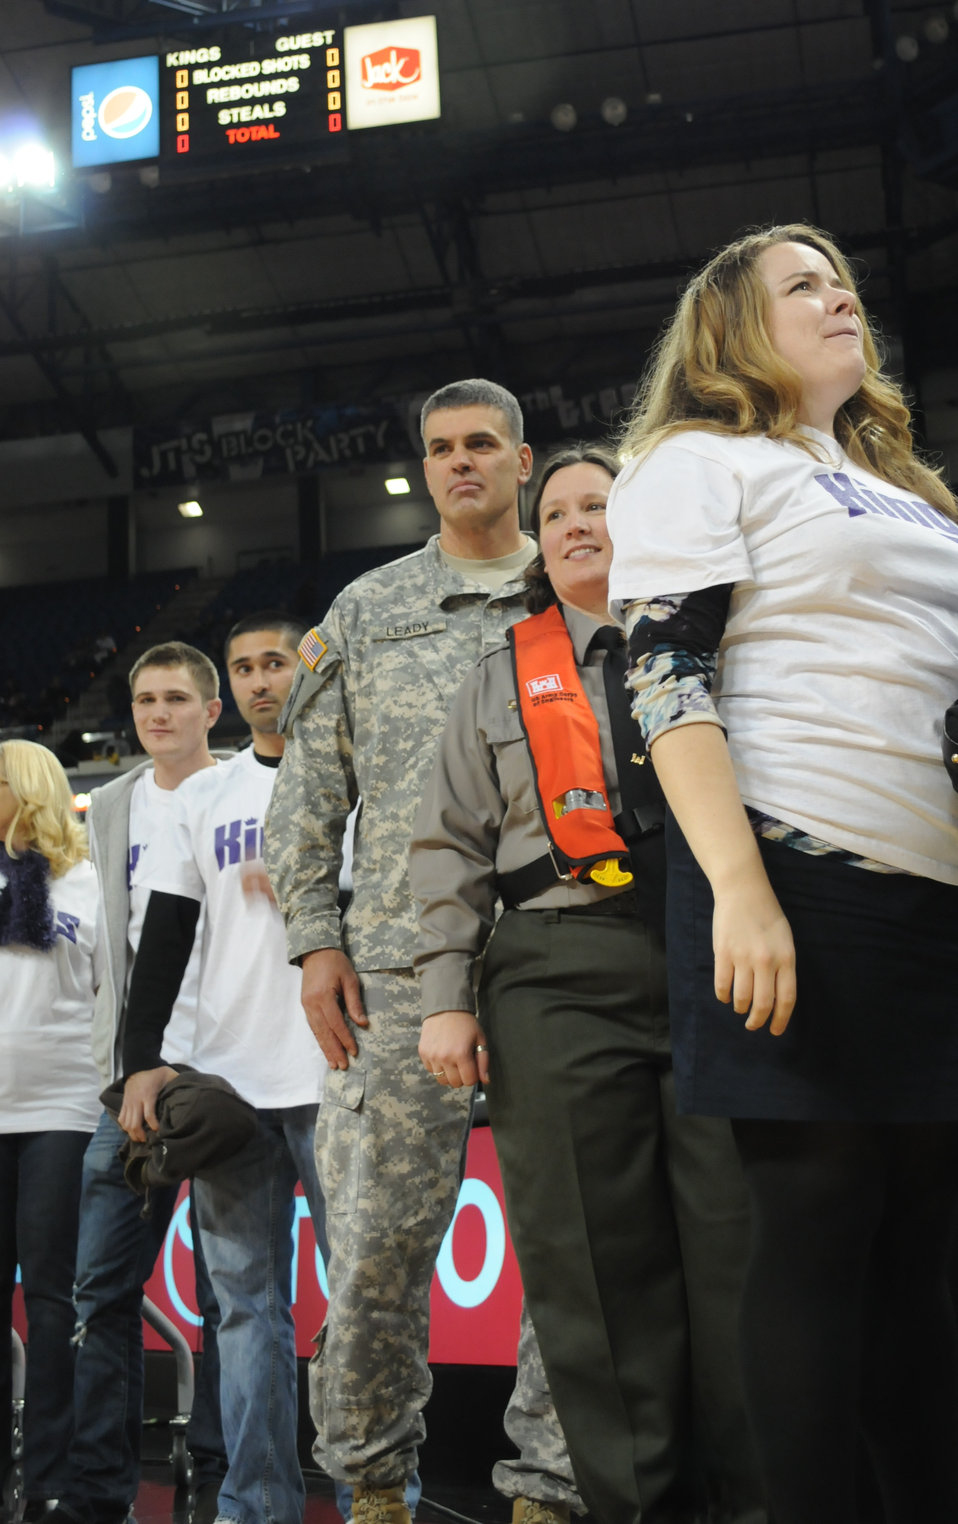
SACRAMENTO, Calif. (Nov. 12, 2010) – Col. Bill Leady (center), commander of the U.S. Army Corps of Engineers Sacramento District, and district park ranger Terry Hershey (second from right) await high-fives from Sacramento Kings players before the Kings’ Military Appreciation Night game here Nov. 10. The Sacramento District also hosted a welcome booth to explain the Corps’ mission and help educate spectators about levee safety, water safety and job opportunities with the Corps.